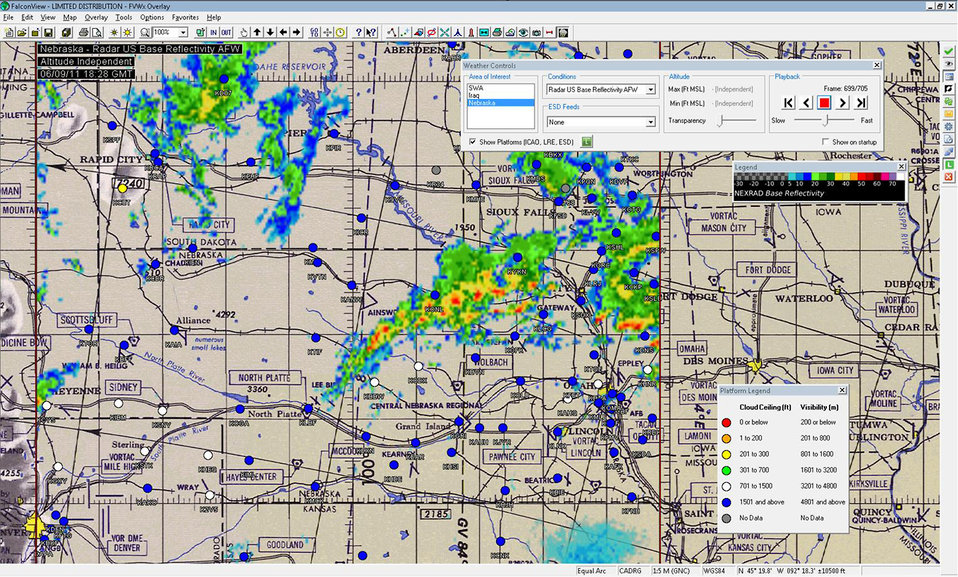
New weather capability

A radar image from FalconView Weather shows cloud ceiling with observation points over Nebraska. A team from the Electronic Systems Center at Hanscom Air Force Base, Mass., is working to make this weather situational awareness capability available to warfighters.